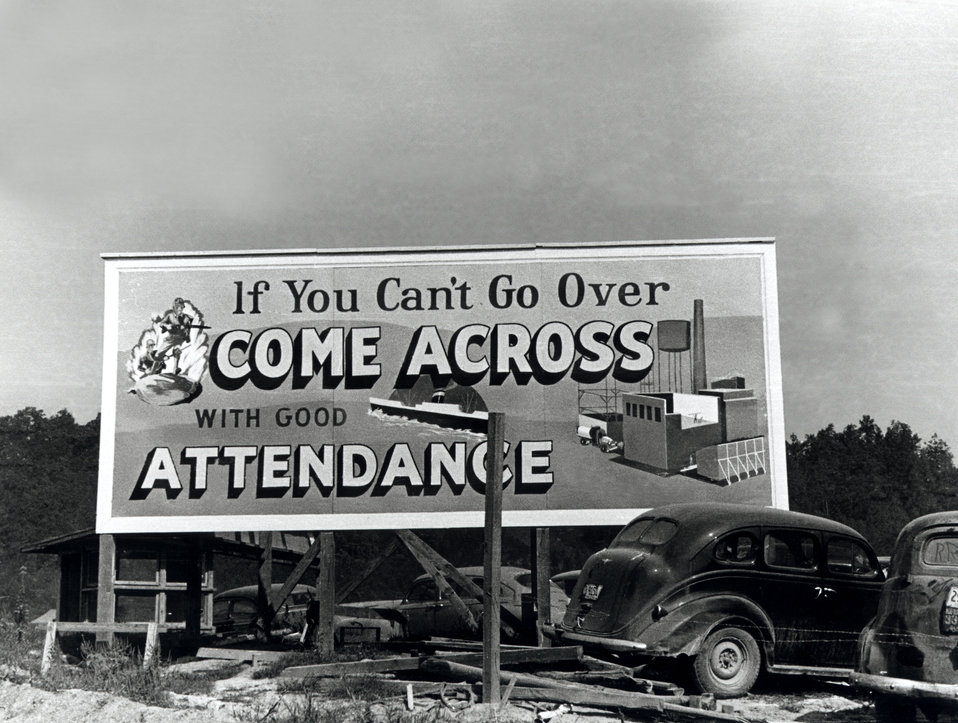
Billboard Oak Ridge

Roll 90-30 DOE photo Ed Westcott

Billboard Oak Ridge Tennessee 10/5/43